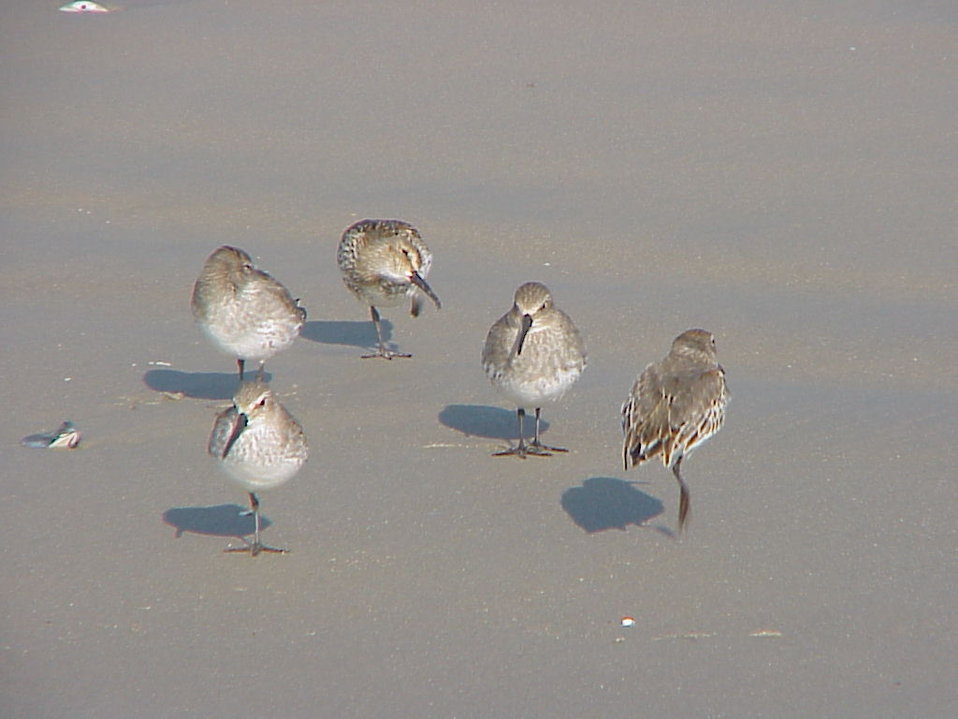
Dunlins at Back Bay National Wildlife Refuge in Virginia.